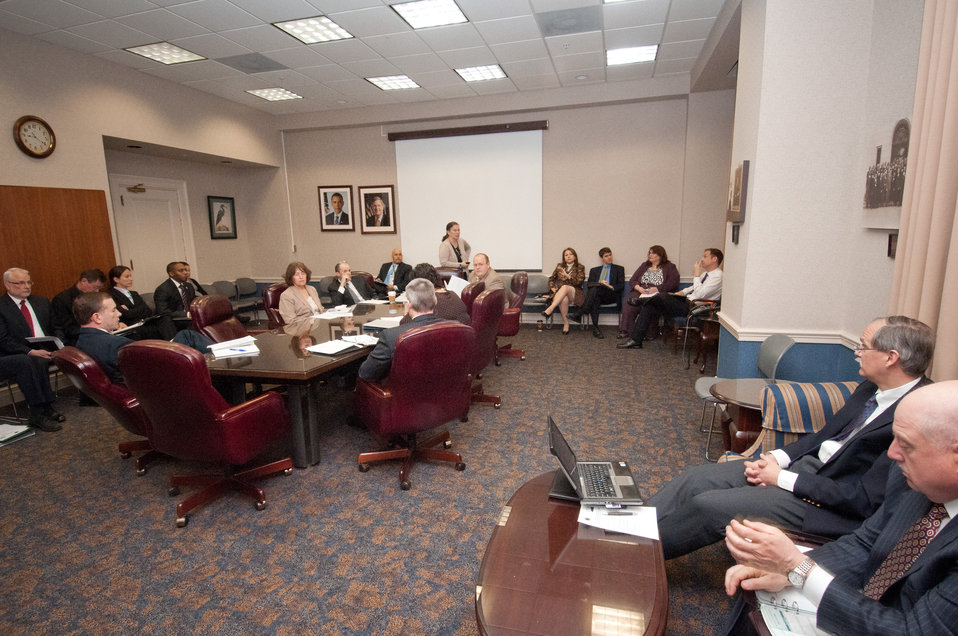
U.S. Department of Agriculture (USDA) Senior Advisor for Tribal Affairs Janie Hipp (standing), moderated an Office of Tribal Relations meeting in Washington, DC, on Monday, March 28, 2011.